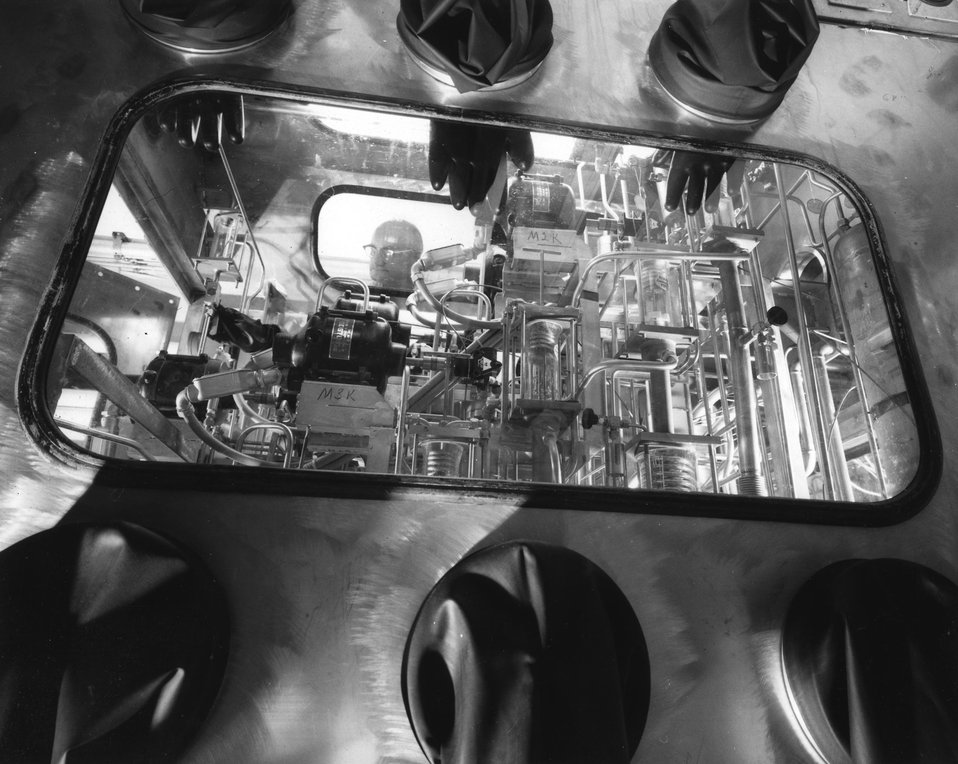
Extraction system for the preparation of uranium-233 and plutonium-239 bearing fuel. c. 1968